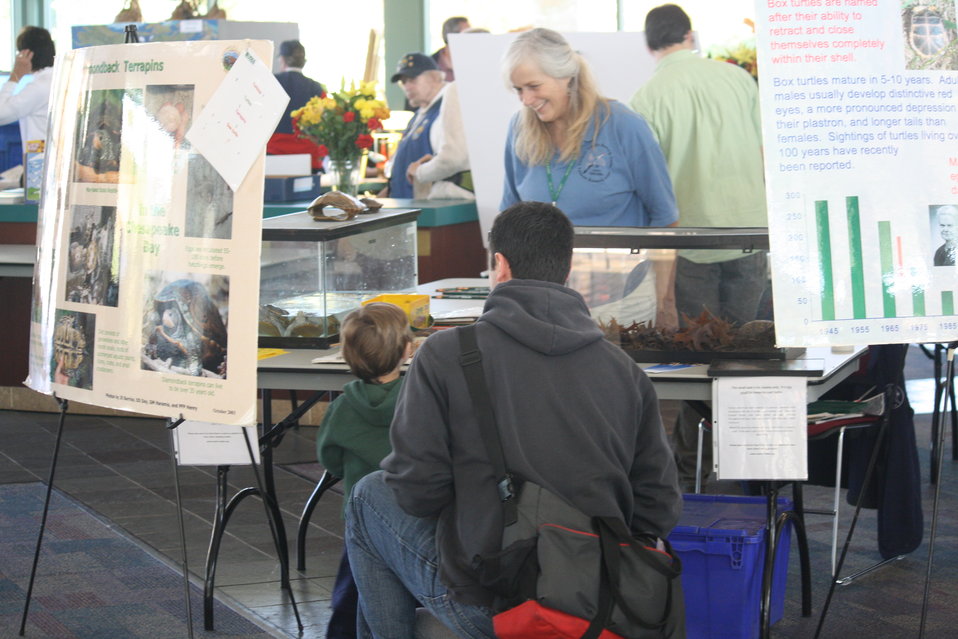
Patuxent Research Refuge 75th Anniversary

Festival Attendee looks at a box turtle and diamondback terrapin display from the USGS Patuxent Research Center.